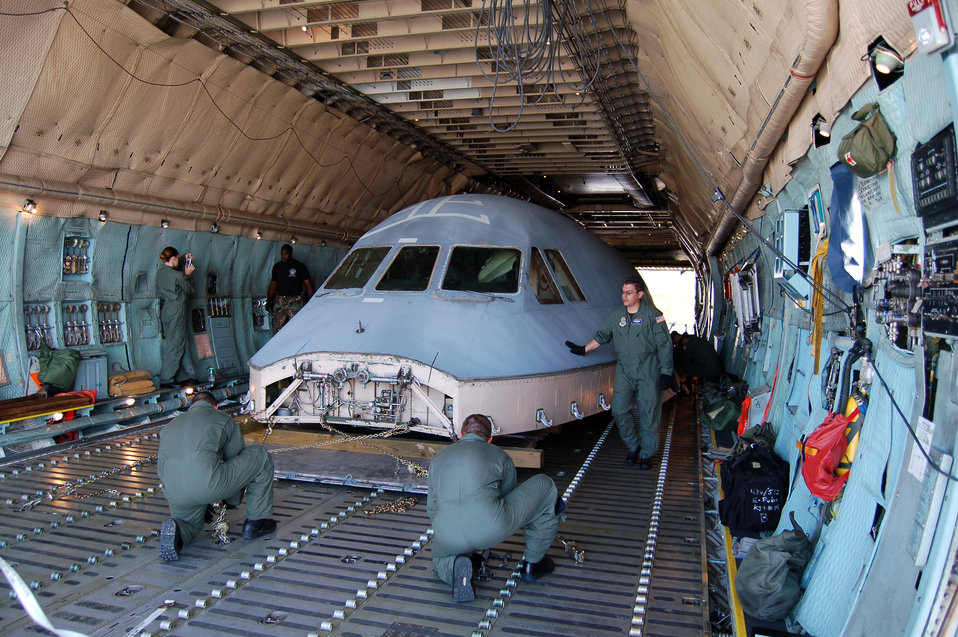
C-5 in a C-5

Airmen 1st Class Ryan Harrison and Jamie Abernathy and Staff Sgt. Stuard Smith tie down the salvaged crew compartment from a C-5 Galaxy onto another C-5 for transport to Robins Air Force Base, Ga., Aug. 22. The flight deck from the C-5 that crashed April 3 will be used as a simulator to help train and test aircrews.